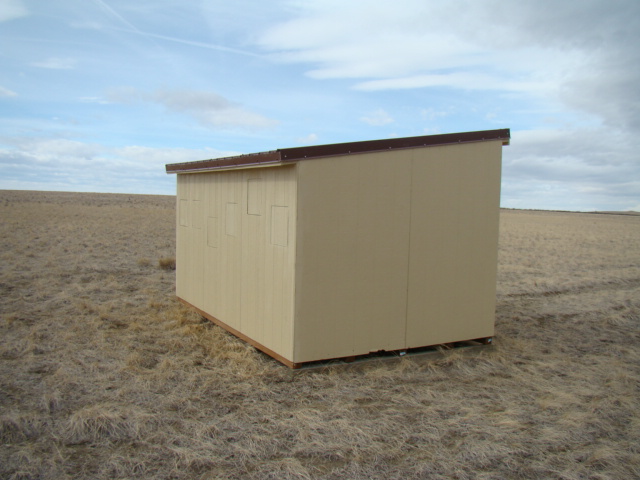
Sharp-tailed Grouse 'Grouse House'

The mating routine of sharp-tailed grouse involves males displaying communally at a traditional site (one used year after year). This site is known as a “lek.” Males compete for mates by performing a ritualized dance in conjunction with calling (often a booming sound) and inflating purplish air sacs along their necks. Females approach the edge of the lek, observe and eventually select a dance participant to mate with.